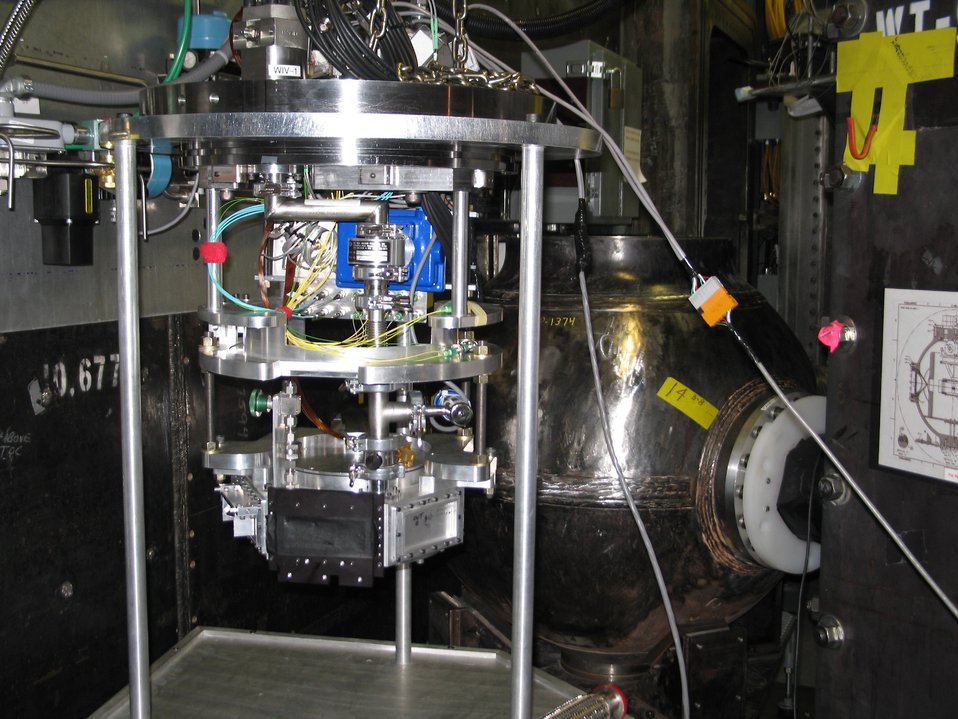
A small racket used to hold diagnostic equipment and the subcritical experiment package at Nevada National Security Site.

The racket is sealed inside the round steel vessel, in which the experiment is executed using a small quantity of chemical high explosive.